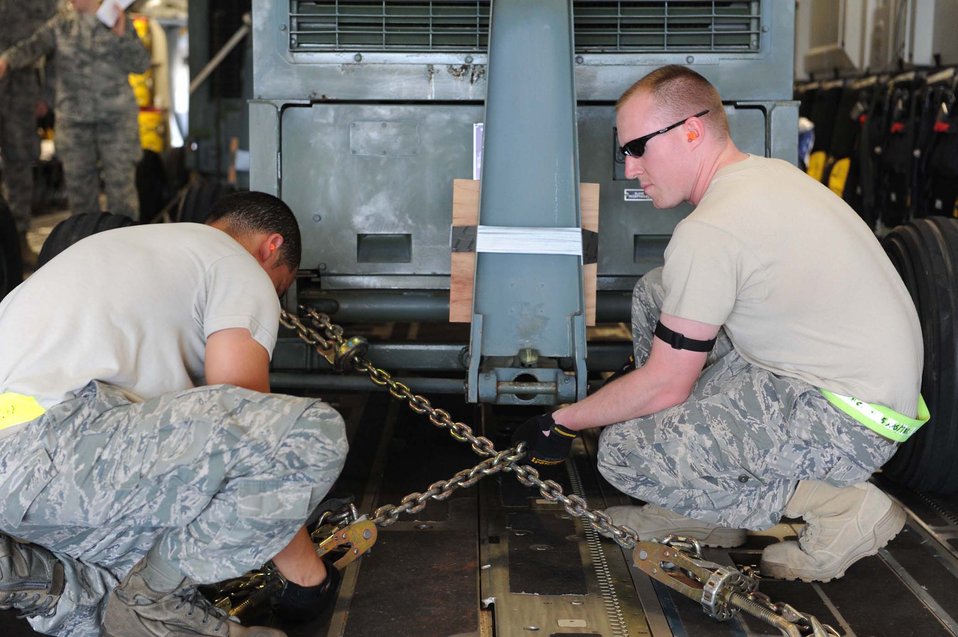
Air transportation Airmen

Airman 1st Class James Limon and Senior Airman Kevin Kust secure a generator to the floor of a C-17 Globemaster III Mar. 12, 2011, at Joint Base Pearl Harbor-Hickam, Hawaii, in preparation for its departure to Japan, to provide support for relief efforts in the wake of tsunami and earthquake damage there. Airmen Limon and Kust are ramp service specialists assigned to the 735th Air Mobility Squadron.